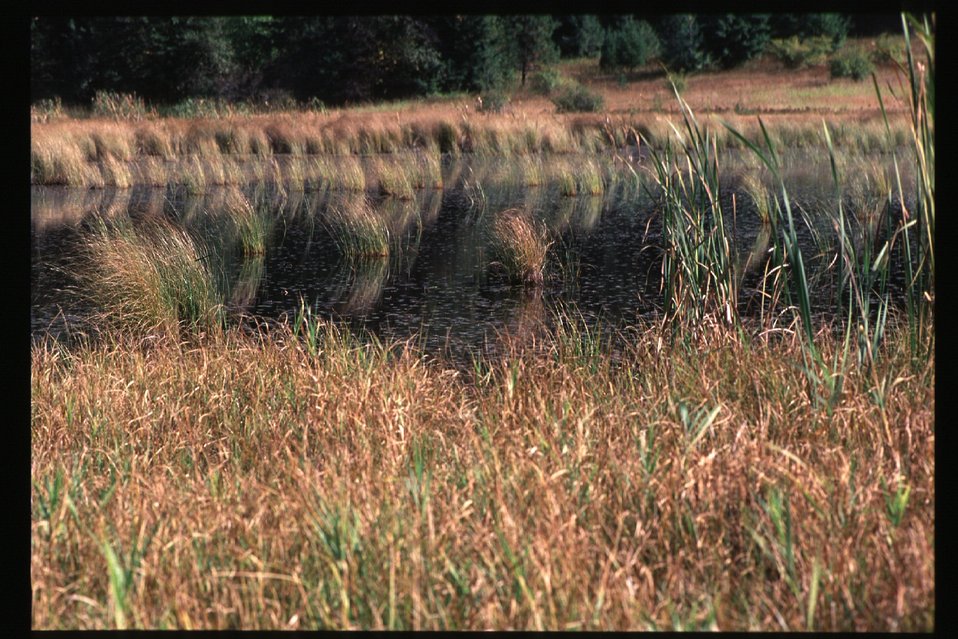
Scenic Gamlin Lake Couer d'Alene Field Office UCSC Upper Columbia Salmon Clearwater District